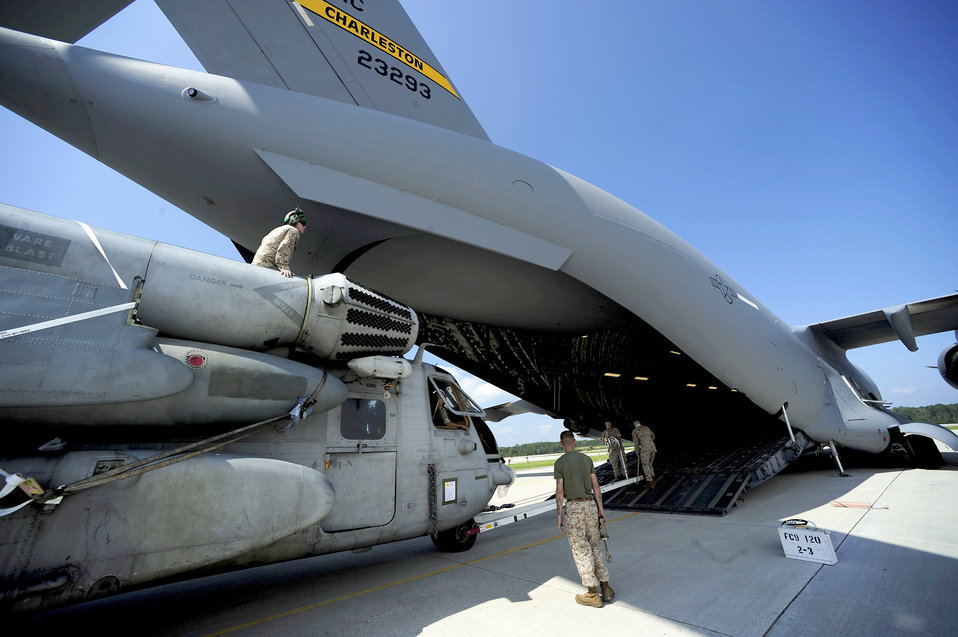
Getting a lift

Airmen and Marines move a CH-53E Super Stallion onto a C-17 Globemaster III Aug. 20, 2010, at Marine Corps Air Station Cherry Point, N.C. The helicopter is one of four that will be used to supplement U.S. military rescue and relief efforts in the flood-affected areas of Pakistan.